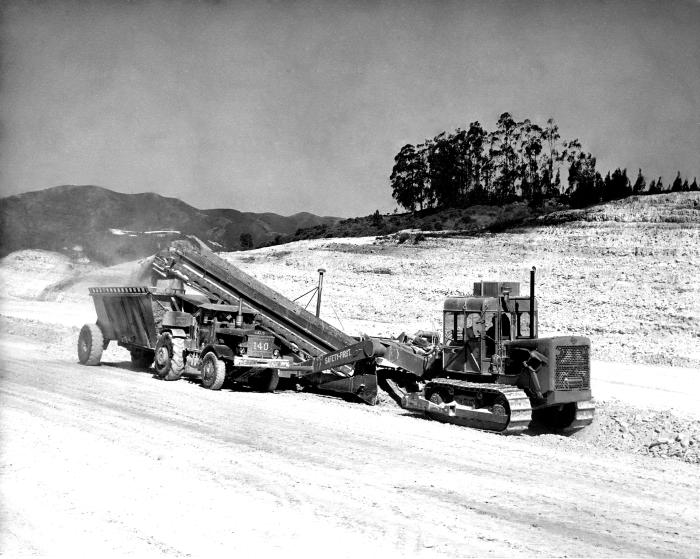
This 1958 historical photograph was provided by the Center for Disease Control's (CDC), National Institute for Occupational Safety and Health (NIOSH), and depicted the loading operation in a diatomaceous earth quarry in Lompoc, California. Both truck and tractor cabs were enclosed and ventilated to reduce the drivers' exposure to the quarry dust. Inhaled dust or other airborne particulate materials containing silica that is deposited in the lungs, will cause the lung tissue to react by creating generalized nodular fibrotic changes, and is known as 'pneumoconiosis', which is also know an pneumosilicosis, or 'grinders' disease'. The image originally appeared in a U.S. Public Health Service Publication No. 601, in an article entitled,'Pneumoconiosis in Diatomite Mining and Processing', 1958.